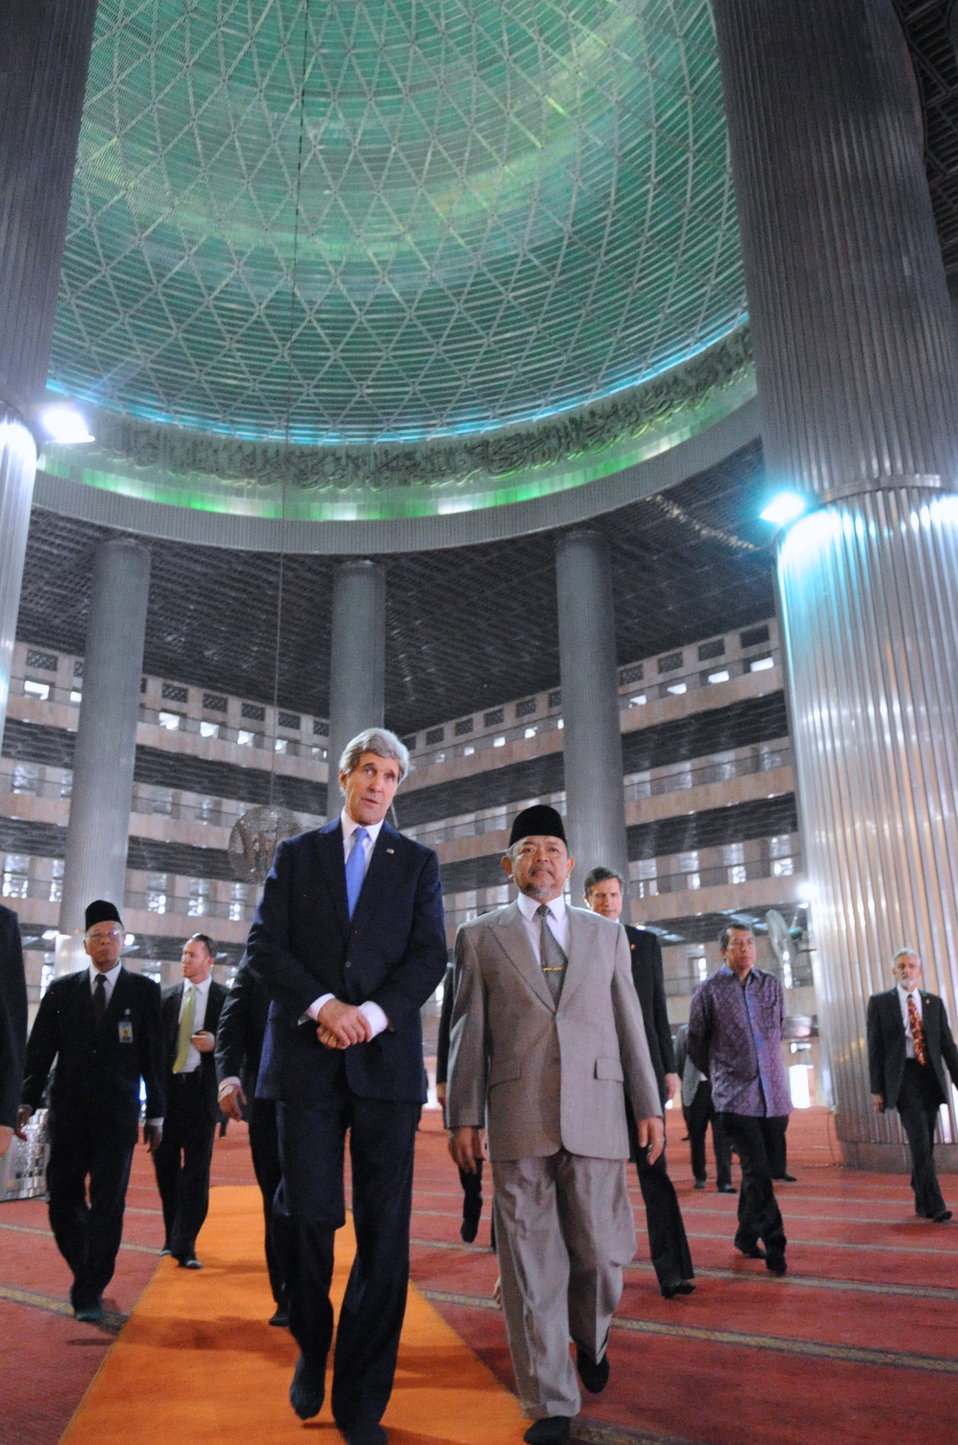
Secretary Kerry Leaves Grand Domed Prayer Hall During Mosque Tour in Jakarta

Grand Imam Ali Mustafa Ya'qub escorts U.S. Secretary of State John Kerry out of the grand domed prayer hall at the Istiqlal Mosque in Jakarta, Indonesia, the largest in Southeast Asia, during a visit on February 16, 2014.